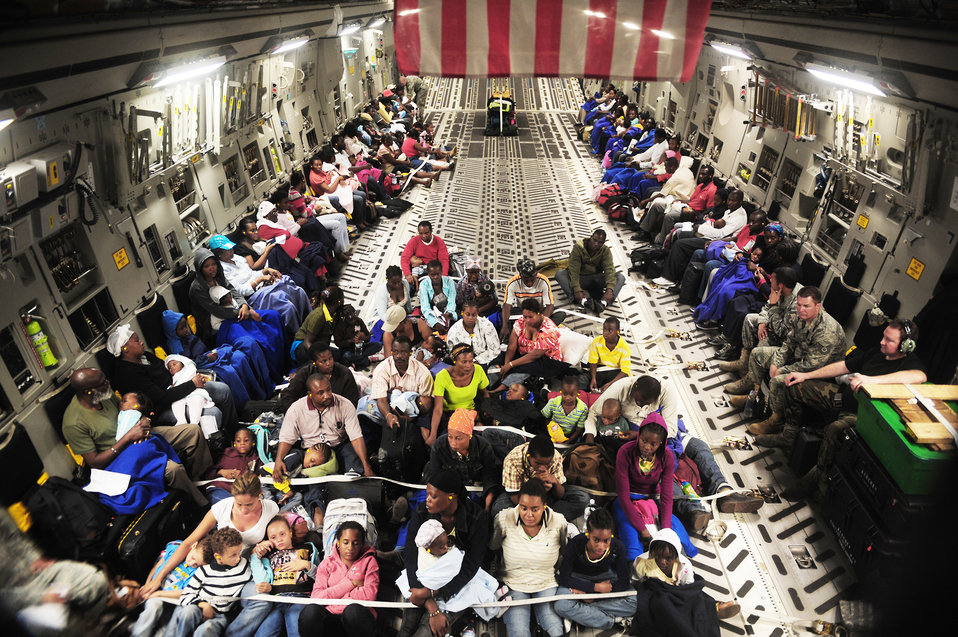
Haiti Earthquake Relief

Haitian-Americans sit onboard a C-17 Globemaster III Jan. 18, 2010, flying from Toussaint L'Ouverture International Airport in Port-au-Prince, Haiti to Orlando Sanford International Airport, Fla. The C-17 crew is assigned to the 729th Airlift Squadron at March Air Reserve Base, Calif. The aircraft is from the 452nd Air Mobility Wing at March ARB.